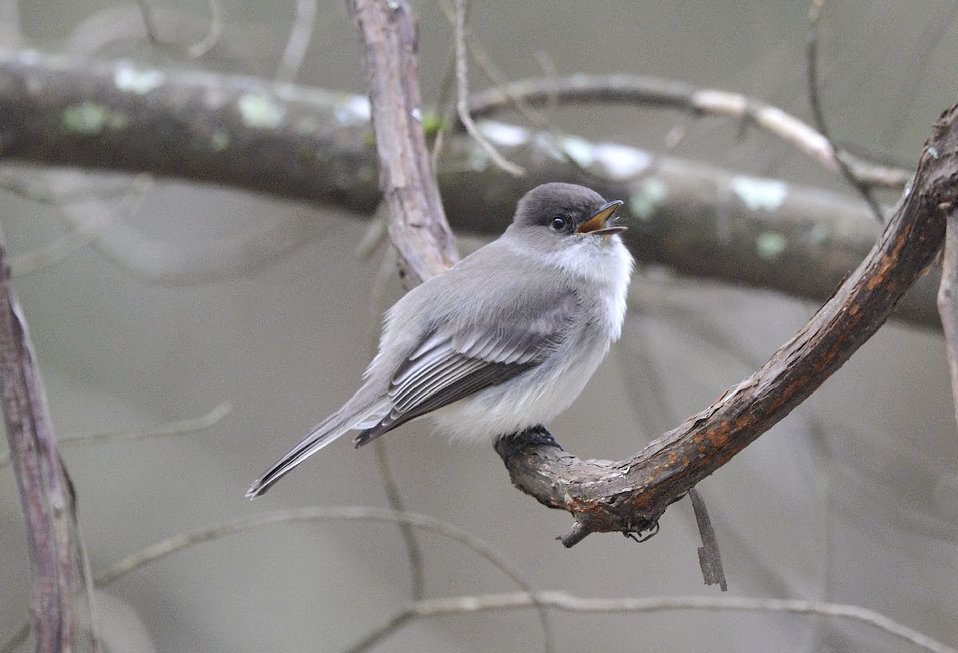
Eastern Phoebe photographed near Quabbin Reservoir, S. Athol, MA on March 18, 2012.